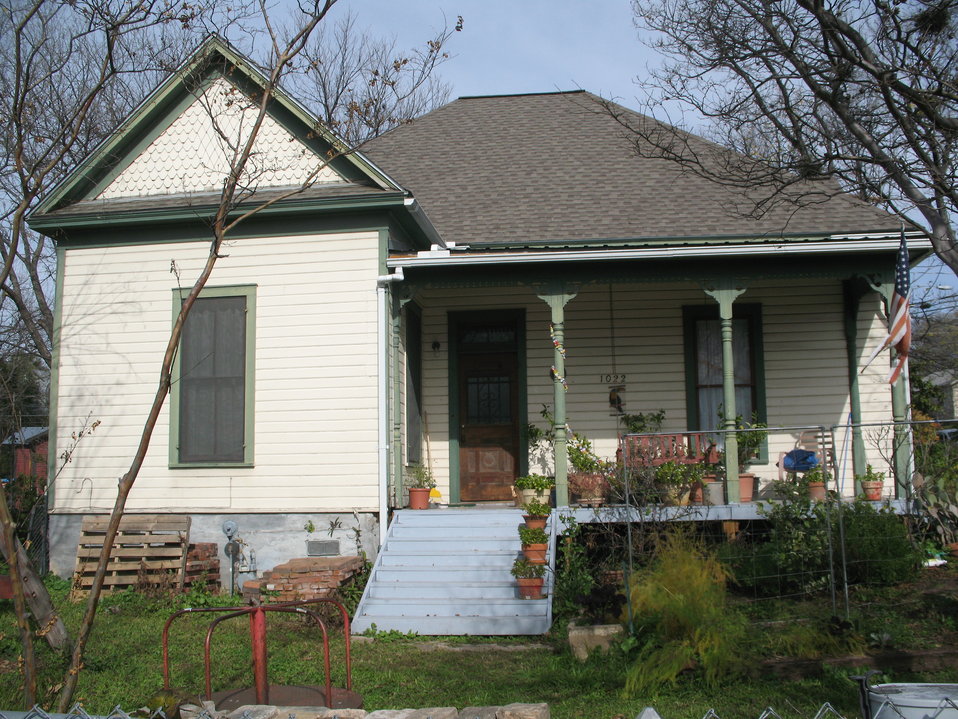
1022 E. 7th St., Austin TX